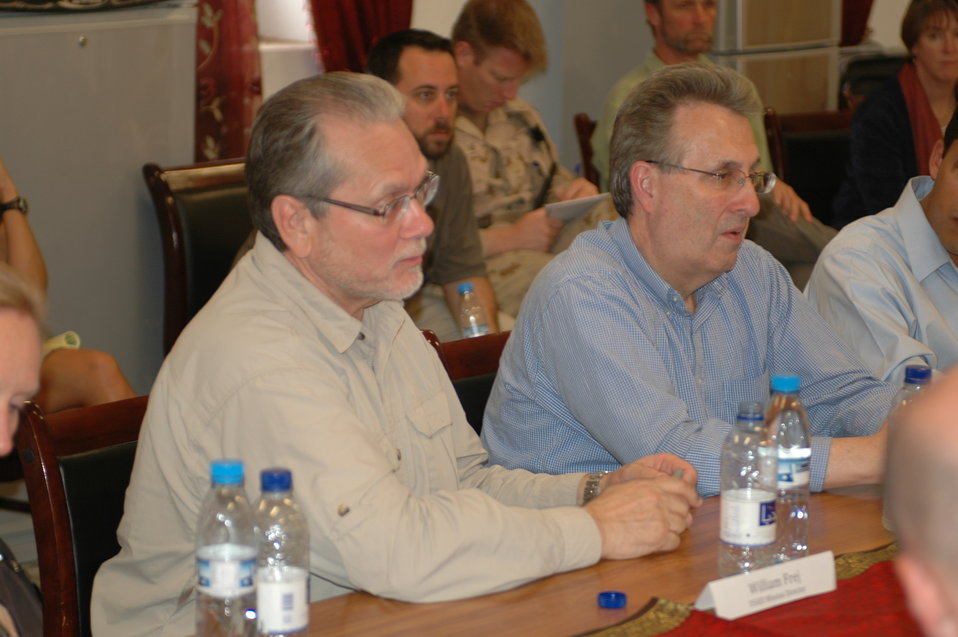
Dr Shah Visits Kandahar April 9, 2010